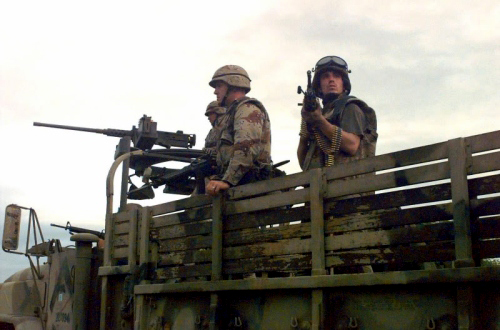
Justin Hughes, a Supervisory Forestry Technician at Turnbull National Wildlife Refuge, served in the Marine Corps from 1991 to 1995 and the Marine Corps Reserve from 1995 to 2001. He became a combat veteran on Jan 7, 1992 In Mogadishu, Somalia. He has worked at Turnbull NWR in Cheney, Washington, since 1998